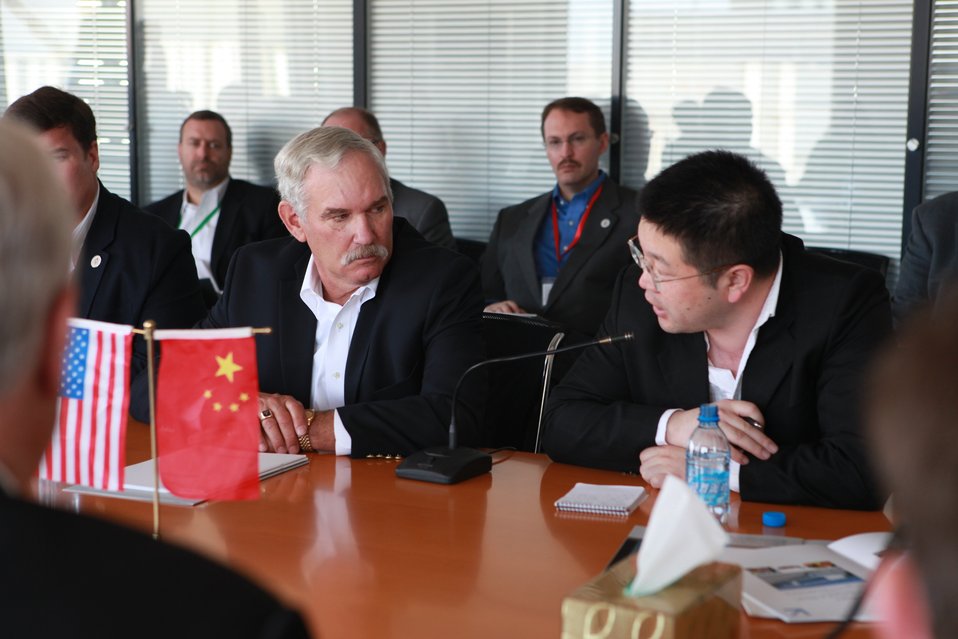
U.S. Department of Agriculture (USDA) Farm and Foreign Agricultural Services (FFAS) Under Secretary Michael Scuse listens to Chinese interpreter at a trade meeting in China on May 5, 2014. Scuse lead an agricultural trade mission to China. The mission is to further National Export Initiative goals in China and is part of President Obama’s Made in Rural America export and investment initiative, designed to help rural businesses and leaders take advantage of new investment opportunities and access new customers and markets abroad.